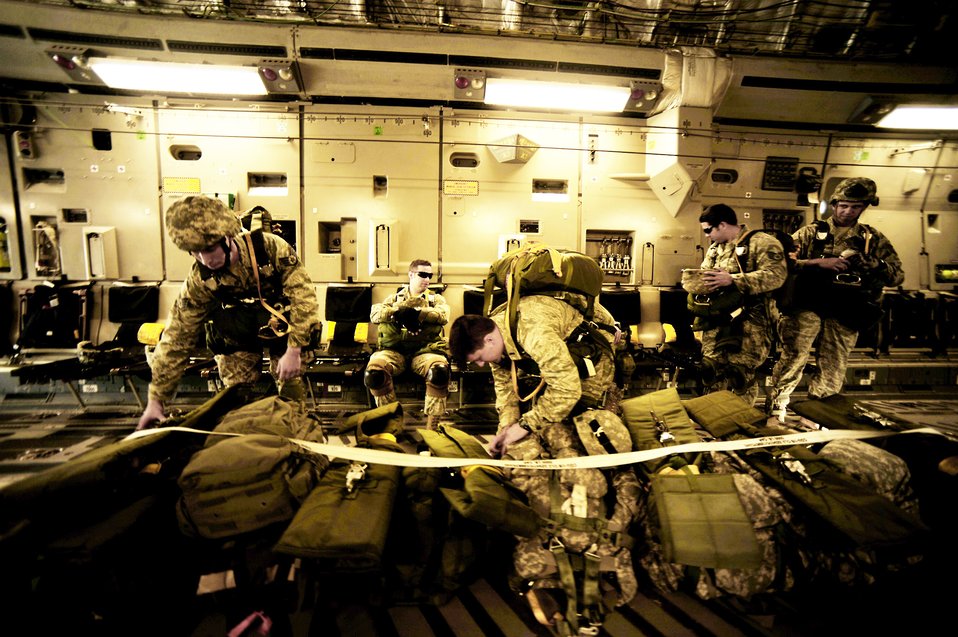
Charleston loadmasters prepare for training mission

Airmen perform static line drops during a local training mission over North Field near Charleston Air Force Base, S.C., April 5, 2010. Airmen flying with the 317th Air Reserve Squadron are assigned to the 820th Security Forces Group at Moody AFB, Ga.